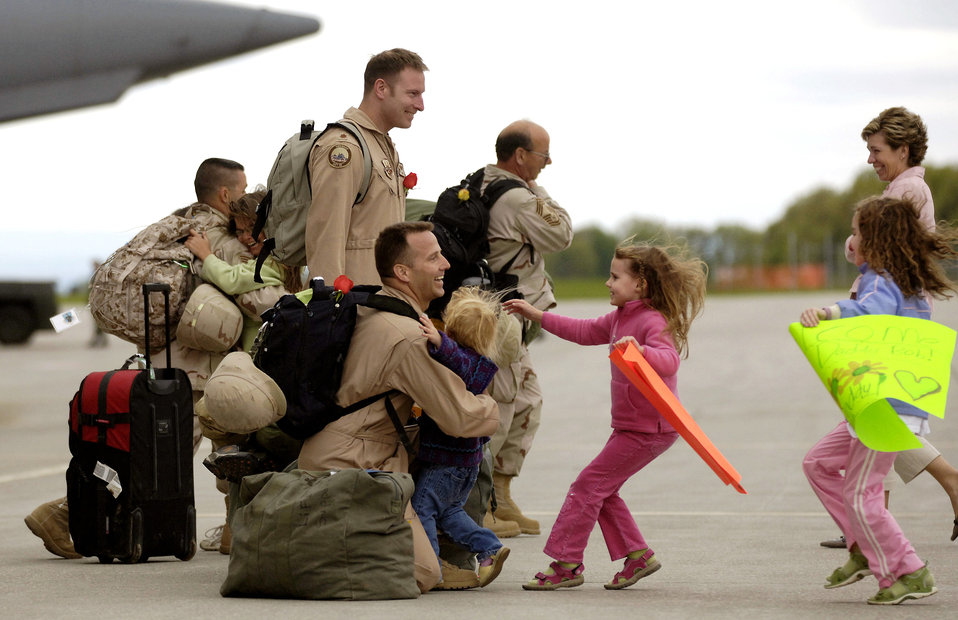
Welcome home

Lt. Col. Robert Ammon embraces his 2-year-old daughter, Jessica, while 5-year-old Casey and 7-year-old Megan follow quickly behind in South Burlington, Vt., on Monday, May 22, 2006. Colonel Ammon is with the Vermont Air National Guard's 158th Fighter Wing. The 158th had deployed in support of Operation Iraqi Freedom.